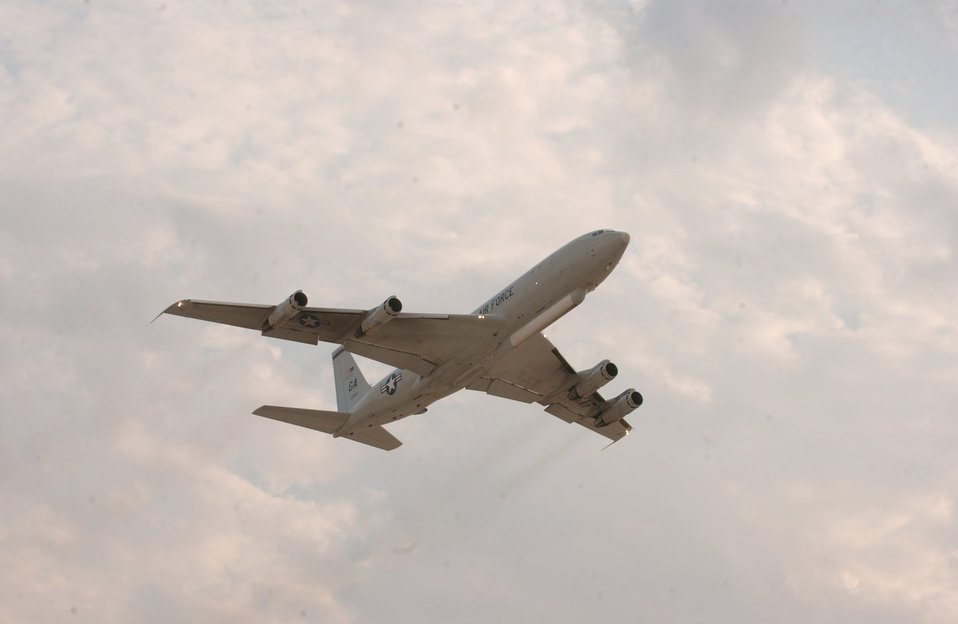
Sailing the skies

An E-8C Joint STARS aircraft departs from a deployed location in Southwest Asia Nov. 30. The flight over Iraq marked 20,000 flying hours in support of Operation Iraqi Freedom by the Boeing 707 equipped with the Joint Surveillance Target Attack Radar System. Accomplishing that feat since early 2003 have been the combined efforts of the 12th Expeditionary Airborne Command and Control Squadron, 16th EACCS and 128th EACCS, all from Robins Air Force Base, Ga., during alternating 90-day rotations. The JSTARS is an airborne battle management aircraft specializing in command and control, and intelligence, surveillance and reconnaissance gathering. Information gathered is passed in real time to servicemembers on the ground conducting combat operations.